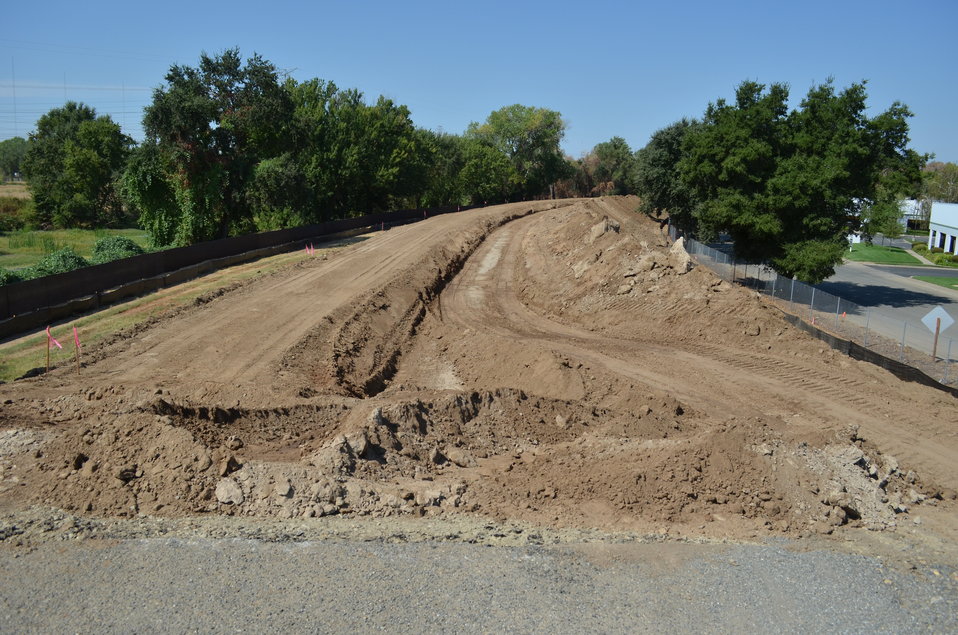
North Sacramento levee work underway

U.S. Army Corps of Engineers Sacramento District levee work is underway Aug. 21, 2013 along the north bank of the American River, just east of its confluence with the Natomas East Main Drainage Canal in north Sacramento, Calif. Complicating the project to install 3,300 linear feet of seepage wall in the levee are land easement rights, an inactive railroad line and an assortment of buried utilities that obstructed the Corps’ work near here more than a decade ago.